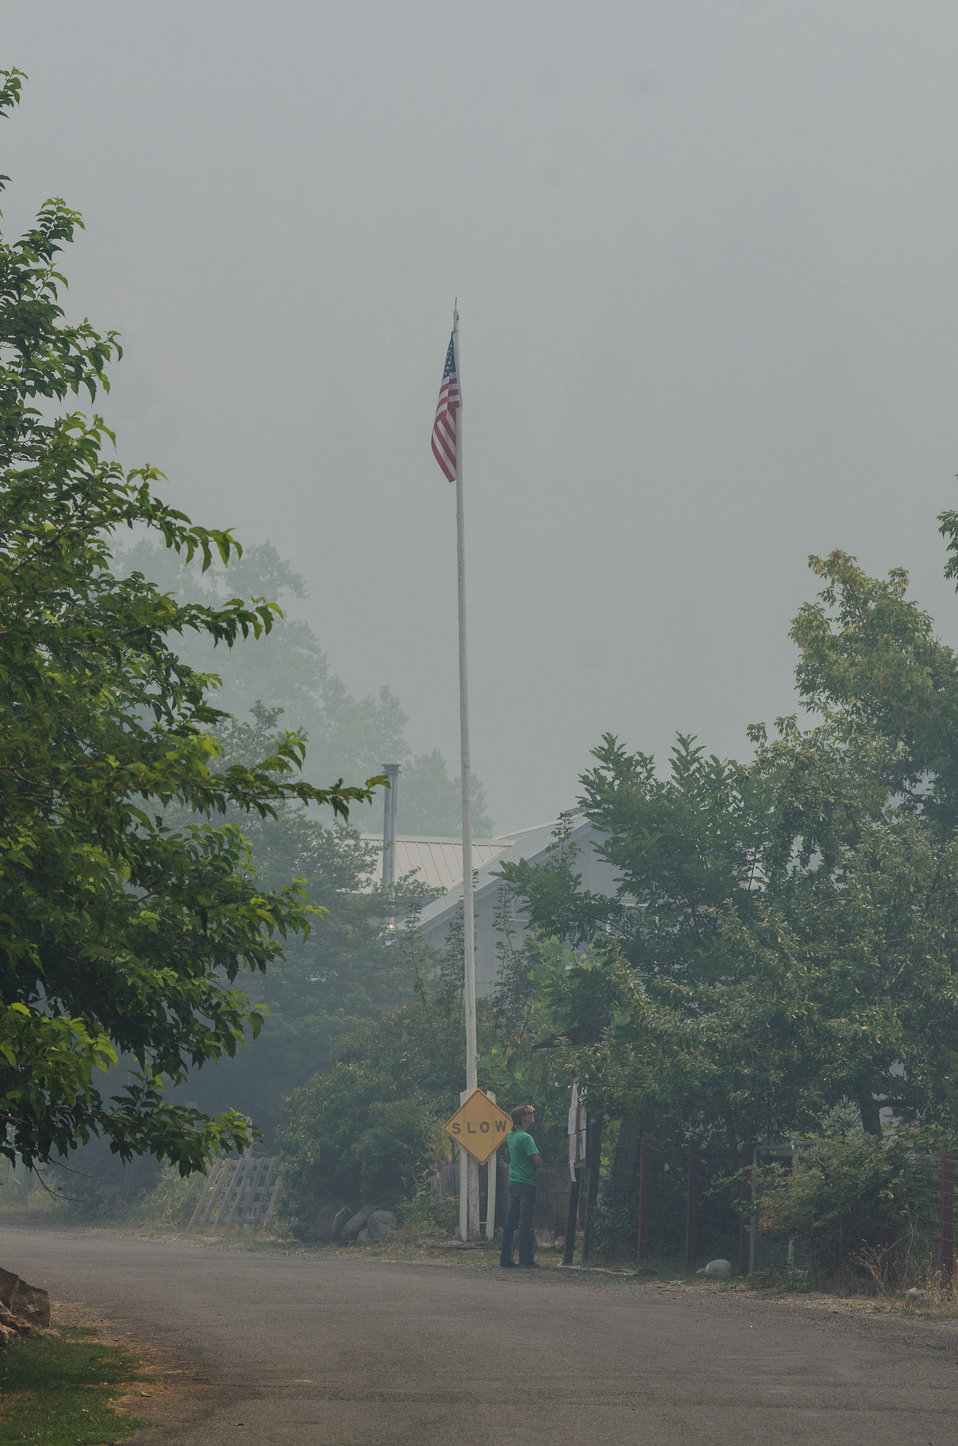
A resident of Sawyers Bar, CA, reads fire information from a community bulletin board on Wednesday, Aug. 6, 2013. Salmon River Complex Fire is northwest of Sawyers Bar and west of Etna and Yreka, CA in the Klamath National Forest.